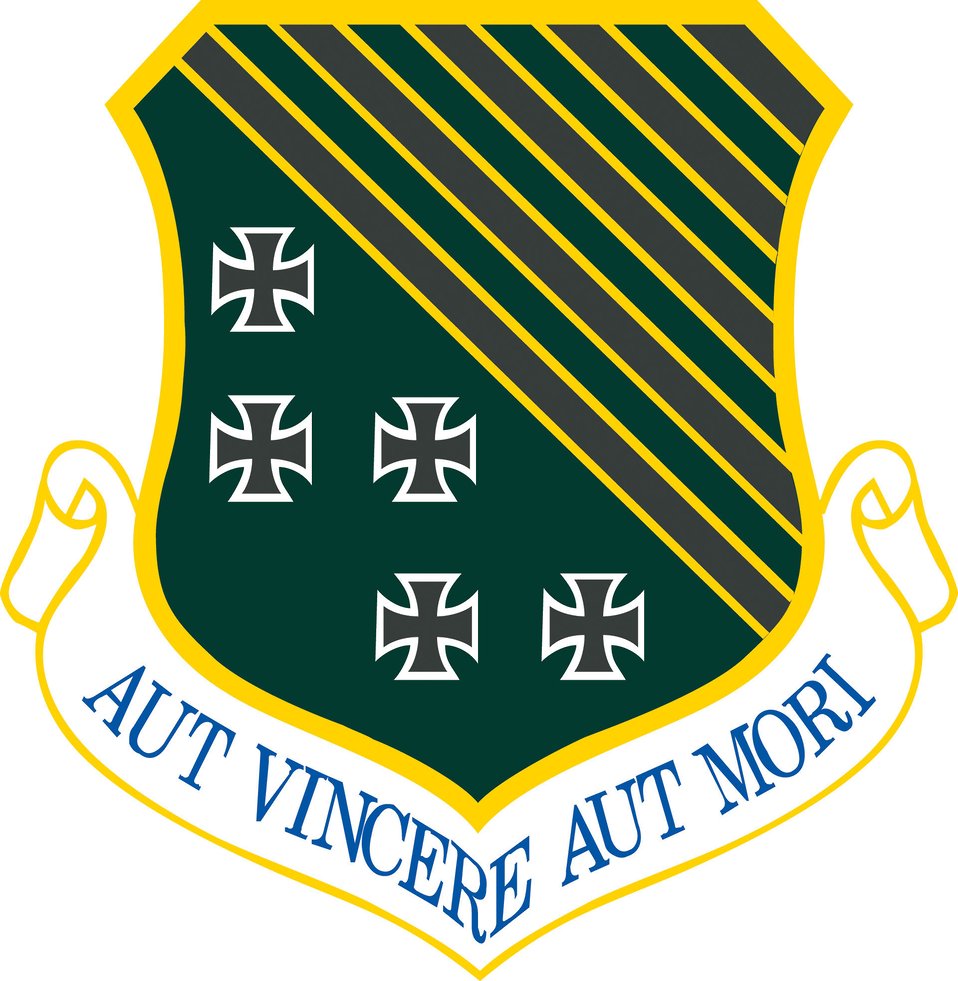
1st Fighter Wing shield